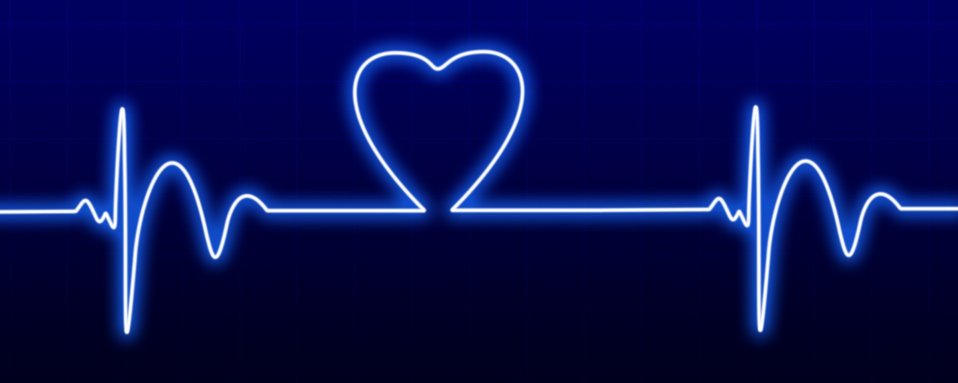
Heartbeat

The beat of a heart in love..